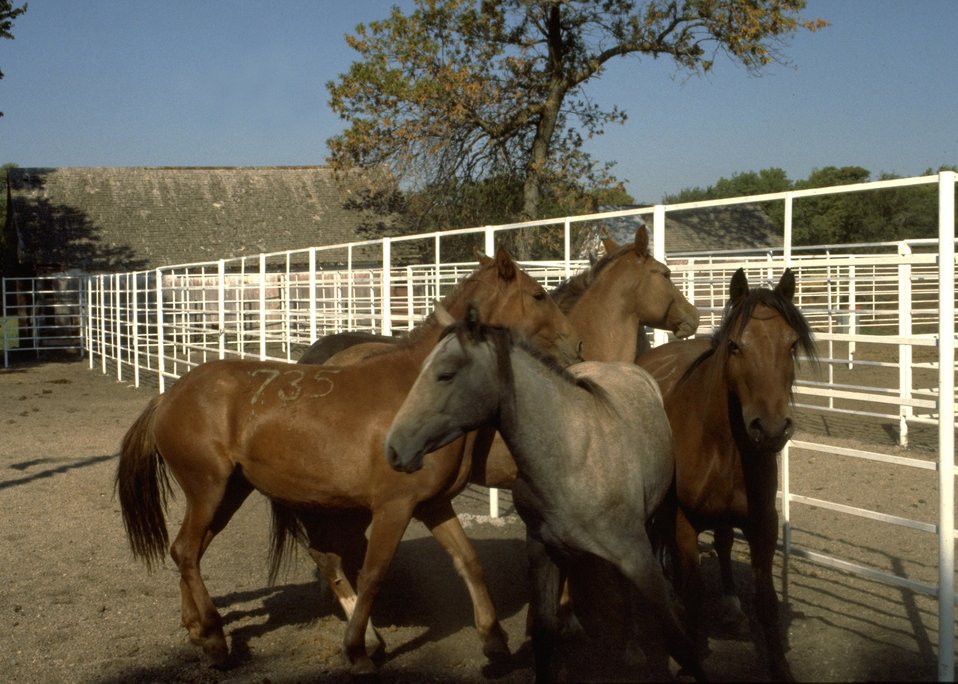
Wild horses.